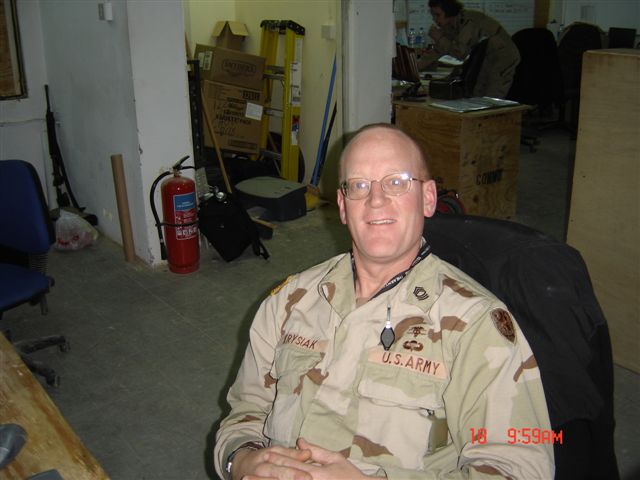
Kyle Krysiak, Biological Science Technician at Marquette Biological Station in Region 3, served in the U.S. Army National Guard as a Master Sergeant. He was deployed to Camp Endurance Iraq, 45 miles south of Mosul. He spent time in most camps from Baghdad north to Turkey from November 2004 to November 2005 and was in charge of all enlisted soldiers dealing with logistics. His unit led two transportation units, two maintenance units, an ammunition company, and a fuel company and delivered supplies to all parts of northern Iraq. One of his most gratifying times was when his unit delivered the ballots for their first election.